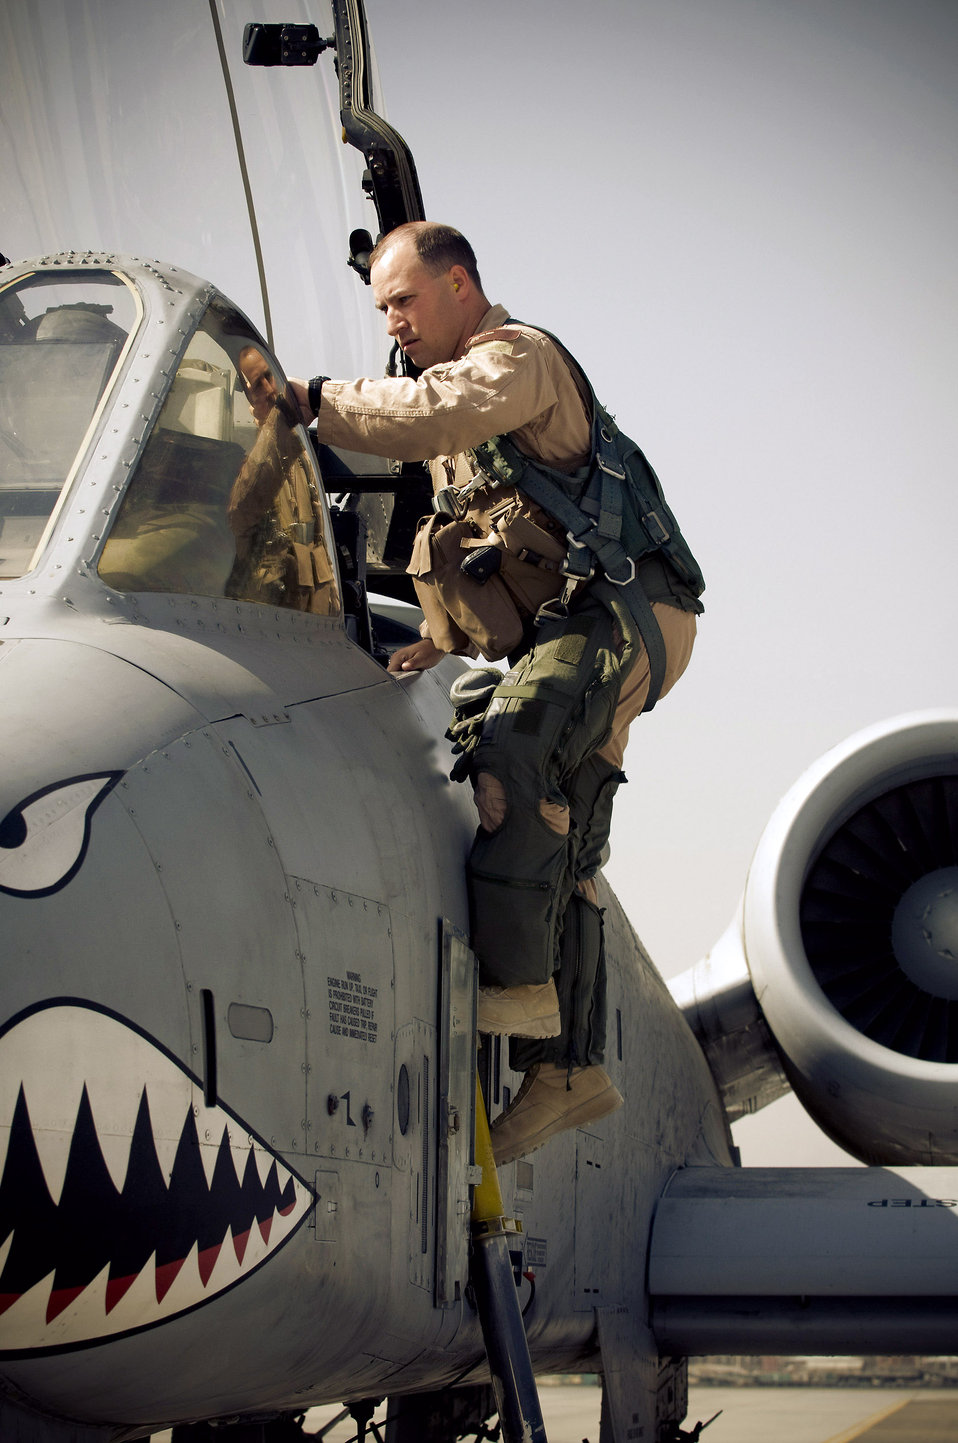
Ready to go

Maj. Erik Knauff climbs into an A-10 Thunderbolt II Oct. 18 at Bagram Airfield, Afghanistan. Major Knauff is a 455th Air Expeditionary Wing flight safety officer and pilot and deployed from Moody Air Force Base, Ga. He is from Perry Hall, Md.